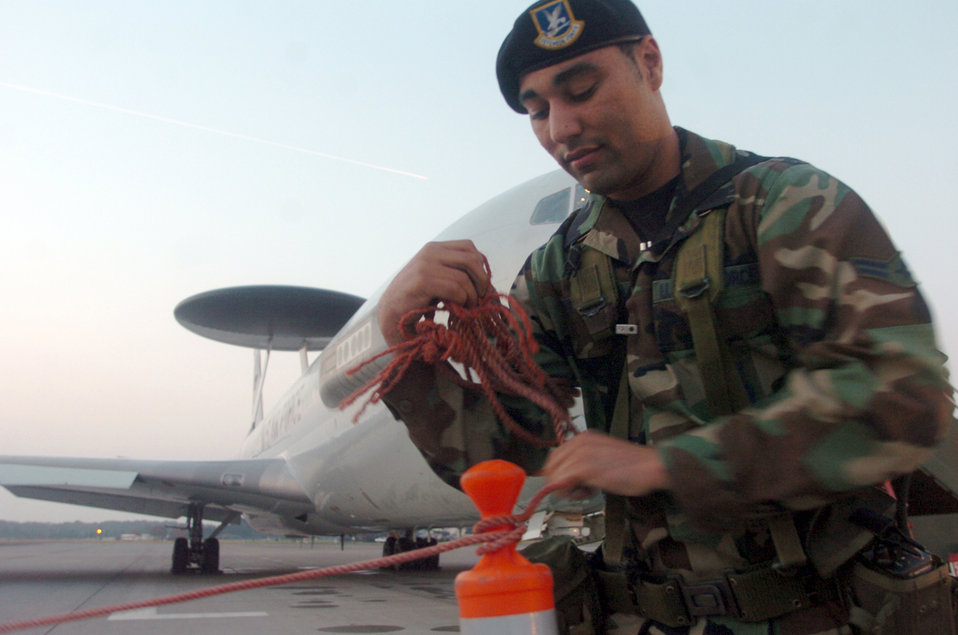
Airmen brandishing a 'Keen Sword'

YOKOTA AIR BASE, Japan -- Airman 1st Class Dominick Petersen removes a cordon around an E-3 Sentry airborne warning and control system aircraft from the 961st Airborne Air Control Squadron at Kadena Air Base, Japan. Airman Peterson is assigned to the 374th Security Forces Squadron here and is taking part in Keen Sword 2005. Some of the exercise events and objectives include dissimilar aircraft training, noncombatant evacuation operations, base security and force protection, search and rescue, and close-air support. The exercise is being conducted at U.S. and Japanese military bases throughout Japan.